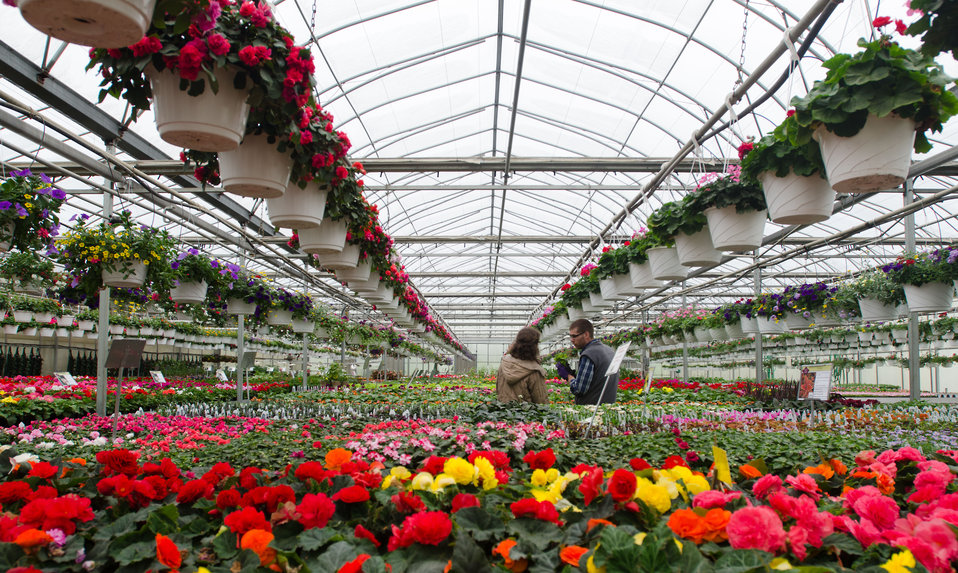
Dwight Hess (grey vest) assists a customer at Good Harvest Farm on April 19, 2011 in Strasburg, PA. Their farm completed a Rural Energy for America Program (REAP) grant supported renovations six months ago that replaced an 80-year old structure with a new 4,000 sq. ft. facility that features energy efficient glass roof with curtains that block or trap heat, radiant heaters in or above the floor, and the replacement of an oil-fired hot-air furnaces with propane fueled boilers that supply fin-tube and cement embedded tube elements with hot water. With current fuel prices, there is a projected 2011 energy cost savings of more than $20,000; a 40% reduction in energy costs – exceeding projected savings. Plant health and quality has improved and been more consistent because the temperature and humidity is computer controlled and distributed evenly throughout the facility. Utilizing sensors and a roof mounted weather station the system can maintain four different climate zones 24-hours a day. Two 1,000,000 BTU propane fueled boilers heat the water to 190 degrees for the 8,000 feet of fin-tube heating elements were used where the original foundation, and the 8,000 feet of tubing that was embedded in a new cement foundation. After traveling through the energy efficient system, water only looses 20 degrees. When temperatures become to hot, motorized roof vents open to allow rising heat to escape; a 98% energy savings from massive fans that previously forced air out. Both systems create a microclimate in and round the plant trays in the growing and sales room. Representing Good Harvest Farm Chris Powell says, “You don’t need to have a lot of land to have a lot of green houses. There are places in cities where vegetables are grow on store roof tops and selling them below in the same structure.”